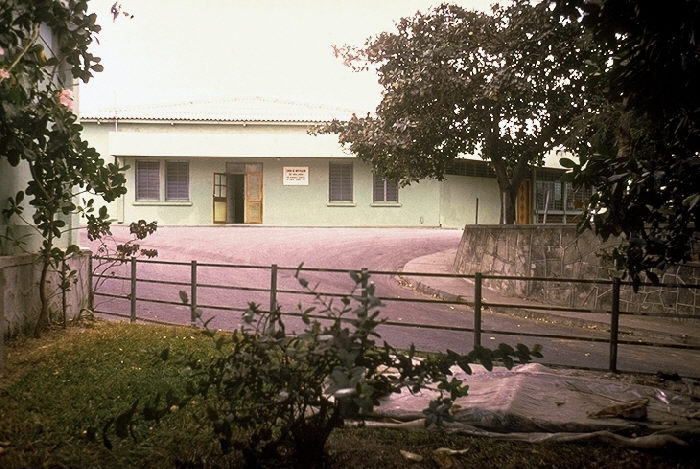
This image captured in 1979, depicts the exterior of the Centers for Disease Control and Prevention (CDC) field station that was located in San Salvador, the capital city of the country of El Salvador. See PHIL 14683, for another view of this facility.